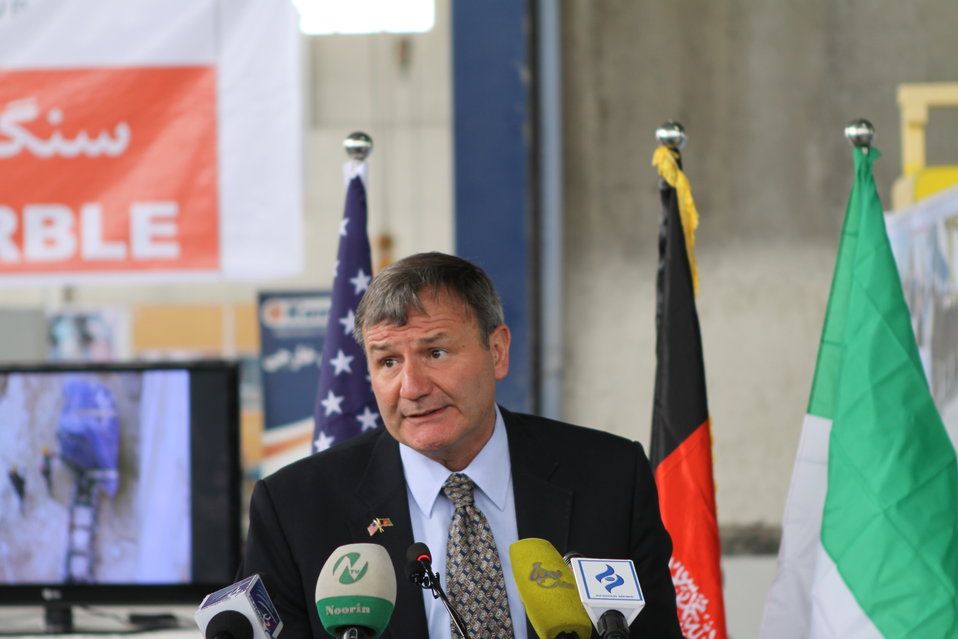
100525 Hirat Marble Conference 235